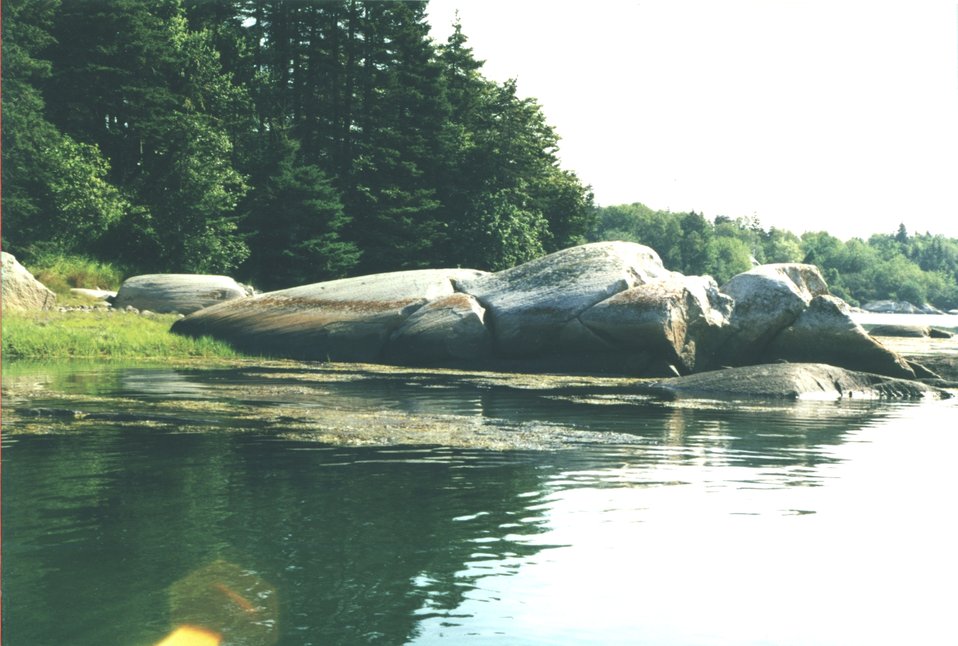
A fine example of glacial plucking showing direction of glacial ice motion from left to right in the image.